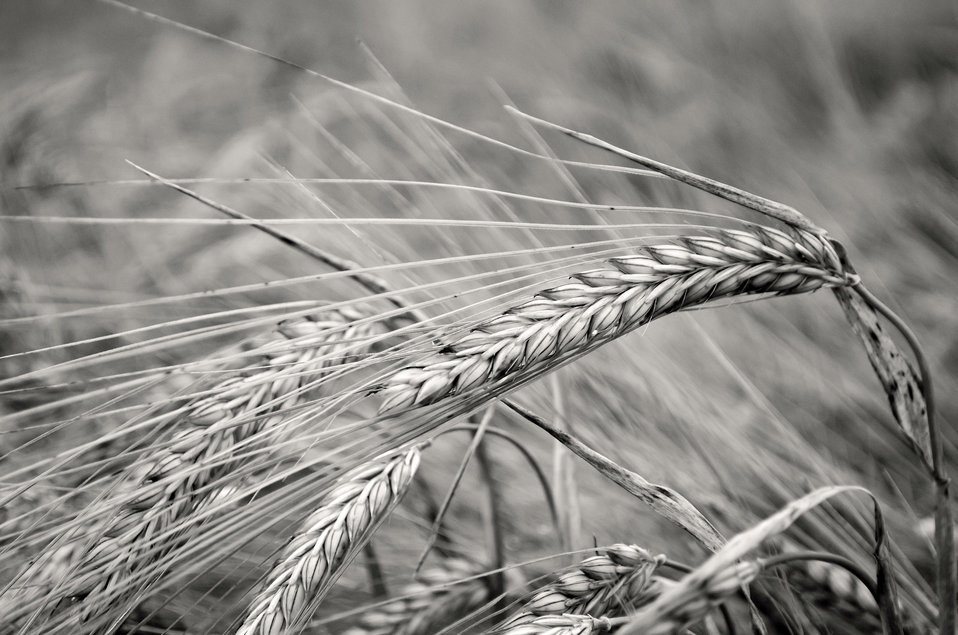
Barley - macro.